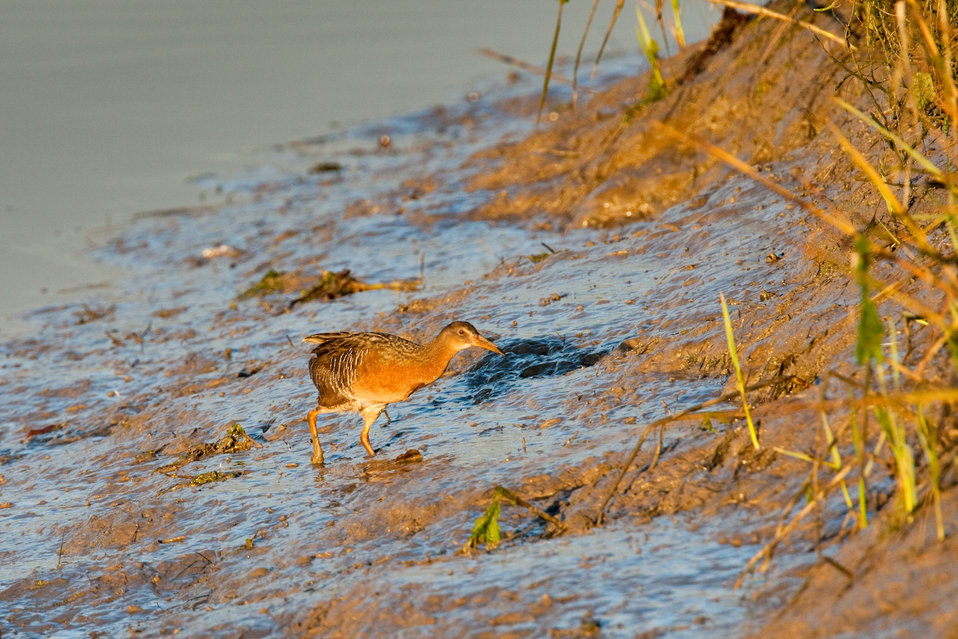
Federally endangered Light-footed clapper rail (adult) creeping to the cord grass